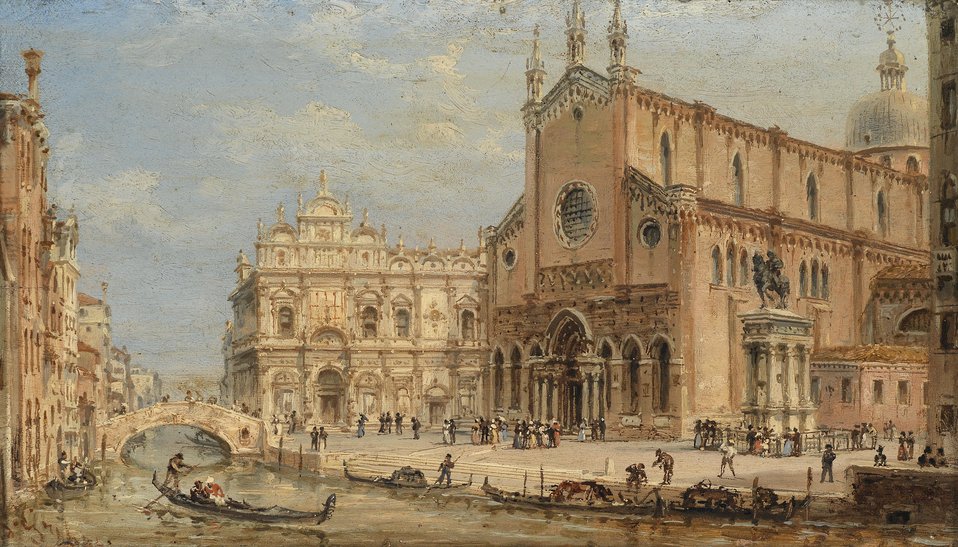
Giovanni Grubas Venedig Piazza San Giovanni e Paolo